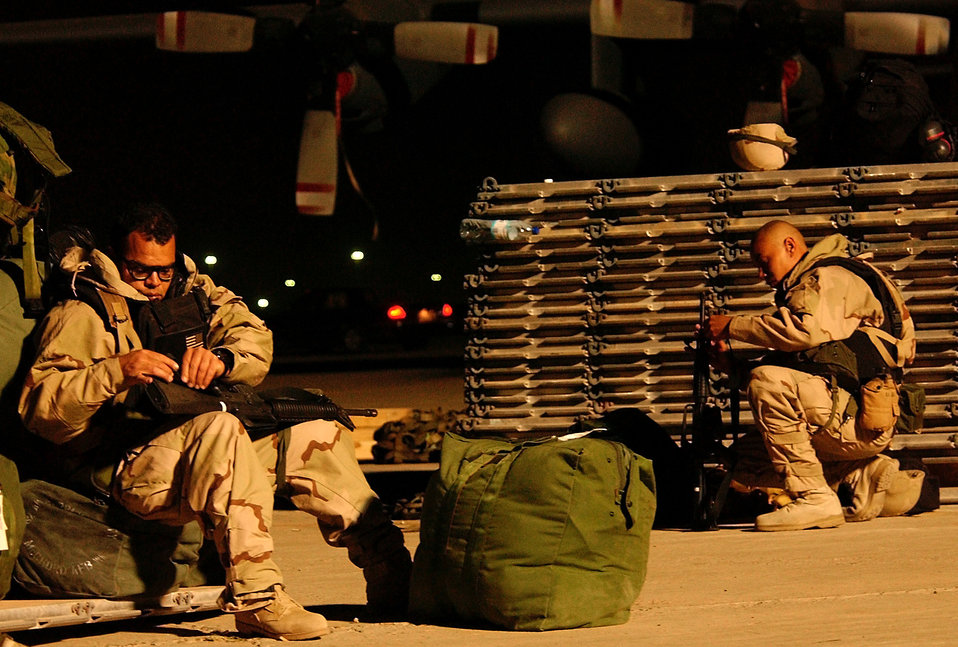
Waiting for a ride

OPERATION IRAQI FREEDOM -- Airmen of the 821st Tanker Airlift Control Element wait to board a C-130 Hercules aircraft March 27. The aircraft will move the airmen to another undisclosed location supporting Operation Iraqi Freedom.